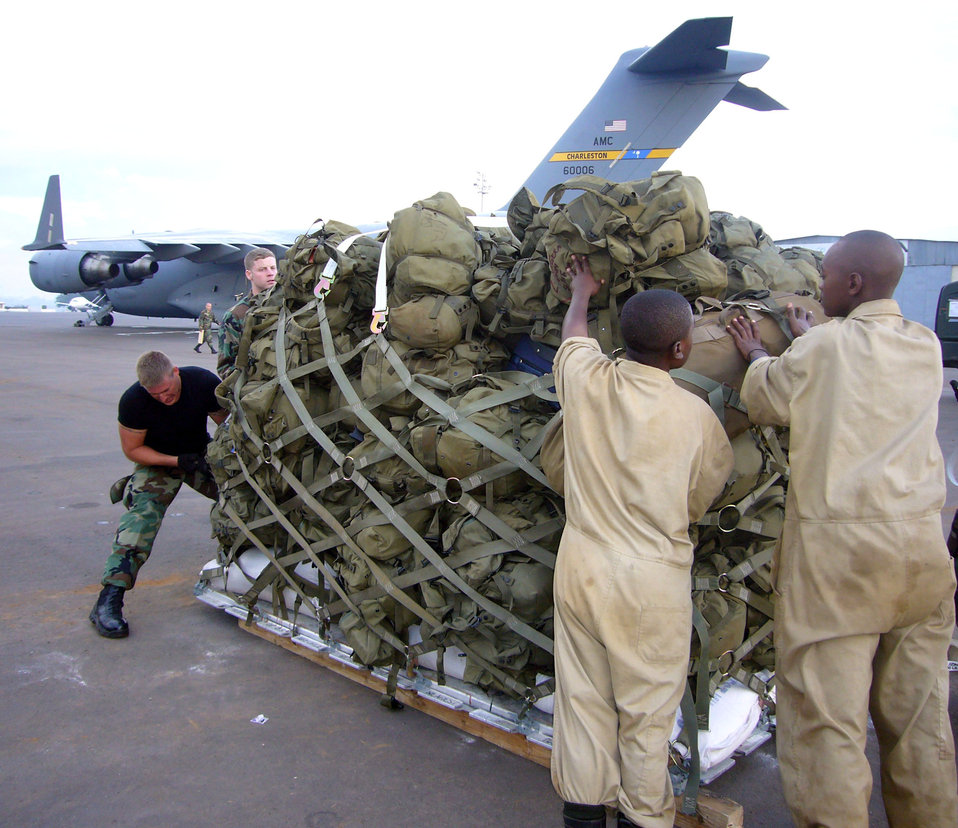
Air Force assists in Darfur troop movement

Aerial porters from the 86th Air Mobility Squadron from Ramstein Air Base, Germany, assemble pallets for Rwandan soldiers deploying to Darfur Oct. 20 at the Kigali International Airport, Rwanda. Airmen are providing airlift support to the African Union effort in Darfur.